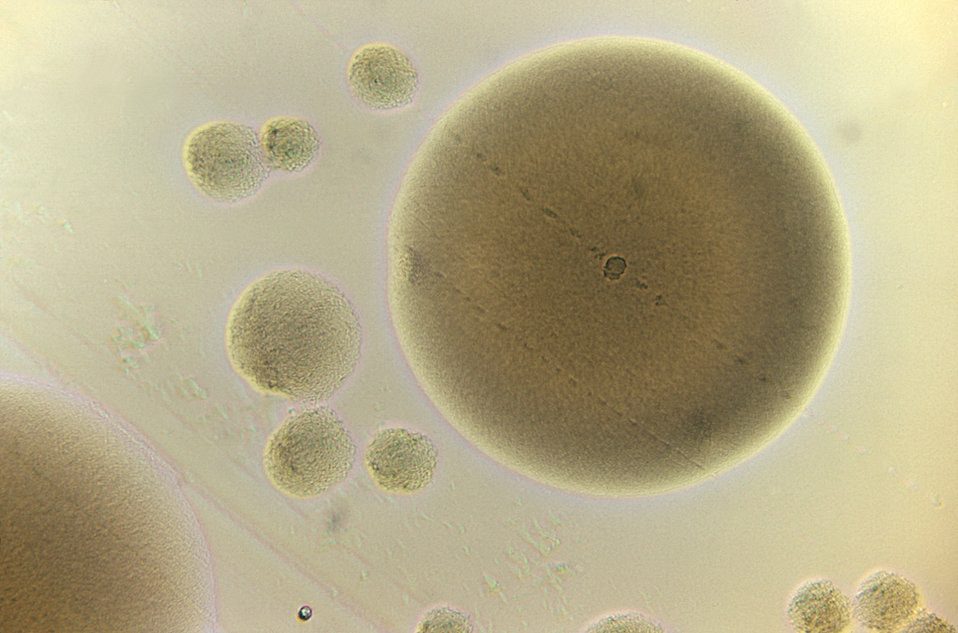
Magnified 125X, this photomicrograph revealed some of the morphology exhibited by a number of large and small Actinomyces odontolyticus microcolonies that had been cultured in a Petri dish atop a medium of brain heart infusion agar (BHIA), for a 48hr period.